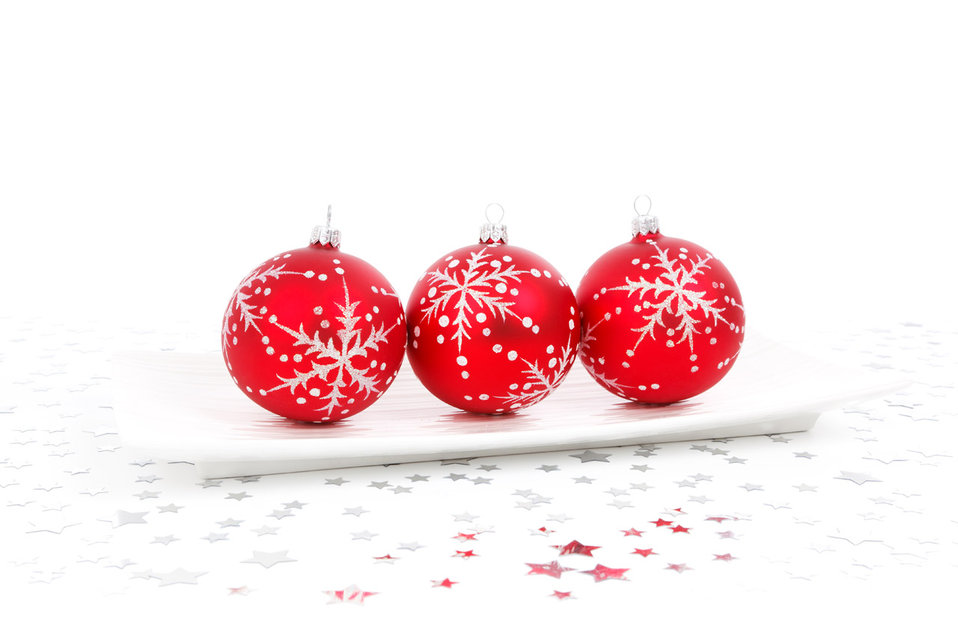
Red bauble decoration

Red baubles on a plate with stars on the background.